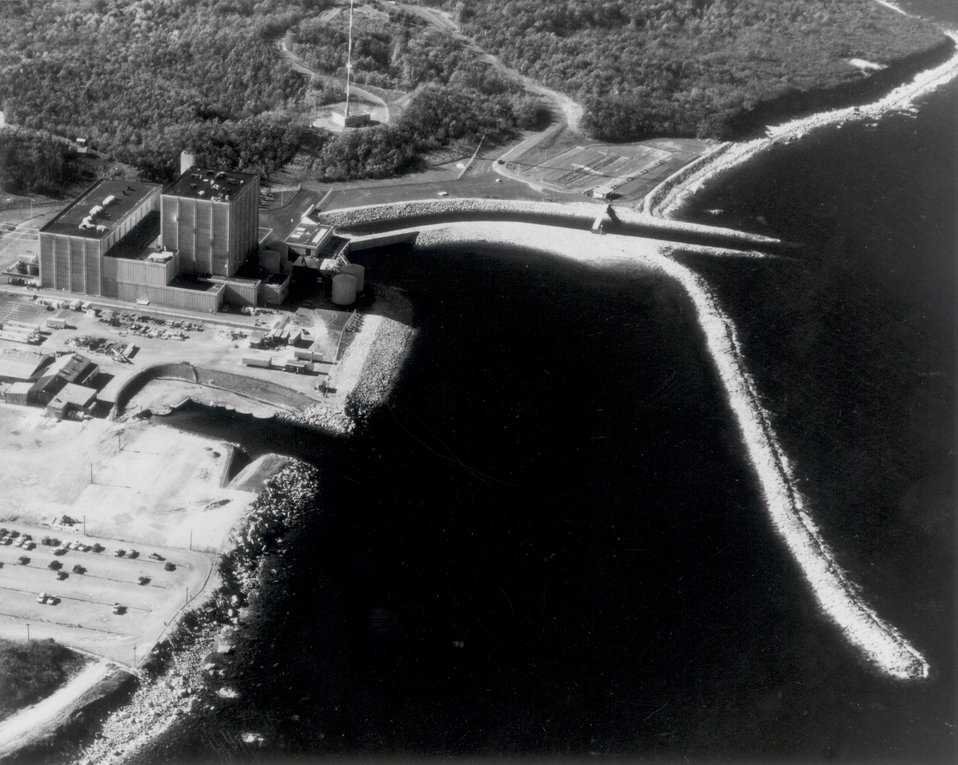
Boston Edison Company's Pilgrim Station Unit 1 at Plymouth, Mass. An 1800 foot breakwater juts from a two-acre recreation spot called the 'Pilgrim Shorefront.' Circa 1972.